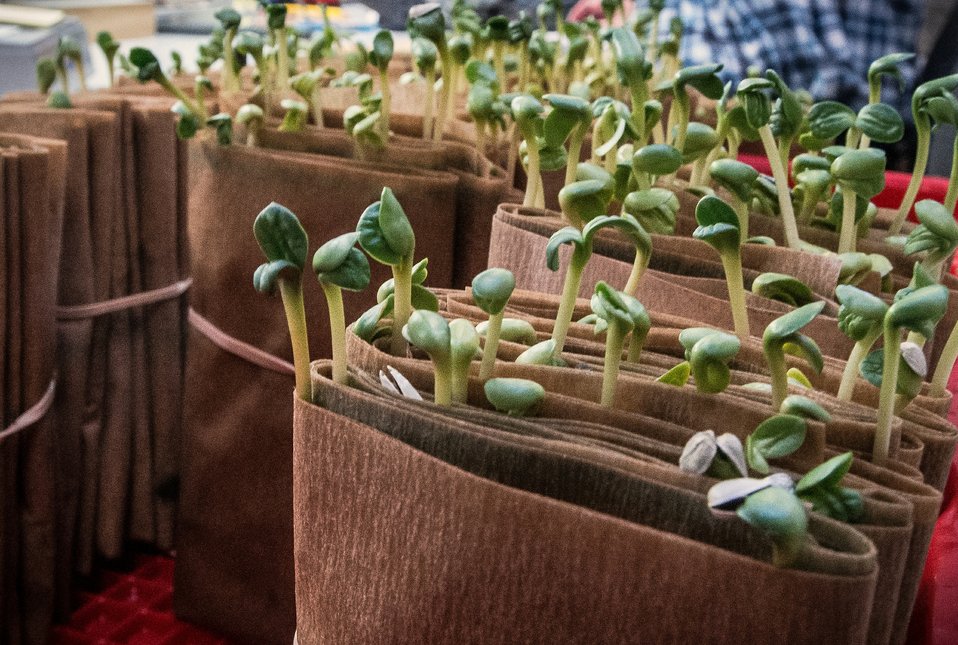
U.S. Department of Agriculture's (USDA) Agriculture Research Service (ARS) National Center for Genetic Resources Preservation (NCGRP) Plant and Animal Genetic Resources Preservation Research Unit Biological Science Lab Technician (Plants) Dennis W Moss performs a safflower seed quality evaluation, while in the germination bay of the NCGRP, in Ft. Collins, CO on Wednesday, Nov. 6, 2013.